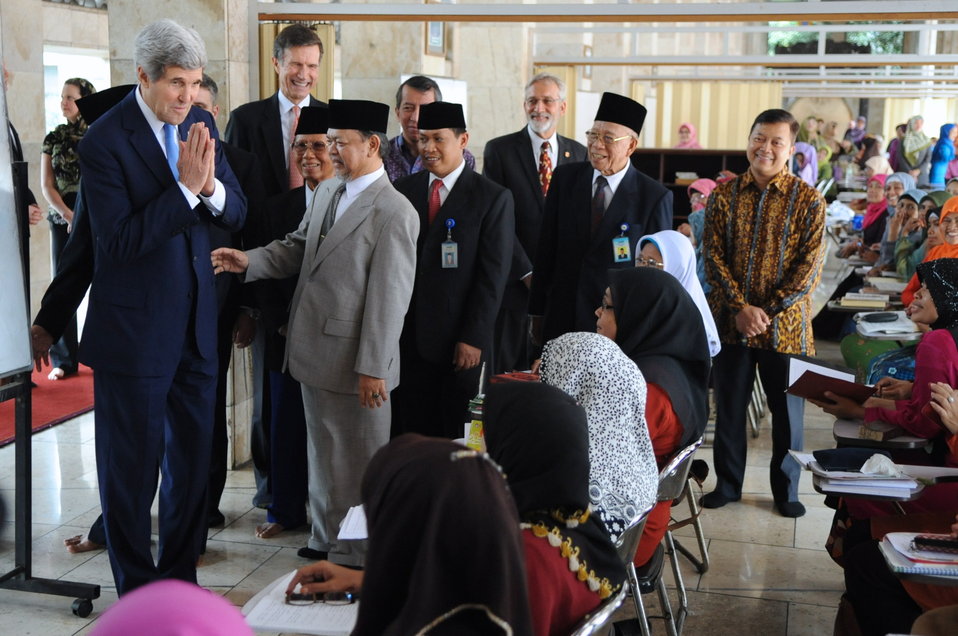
Secretary Kerry Bids Farewell to Female Students at Istiqlal Mosque

U.S. Secretary of State John Kerry bids farewell to a group of female students studying at the Istiqlal Mosque in Jakarta, Indonesia, as he visited the largest mosque in Southeast Asia on February 16, 2014.